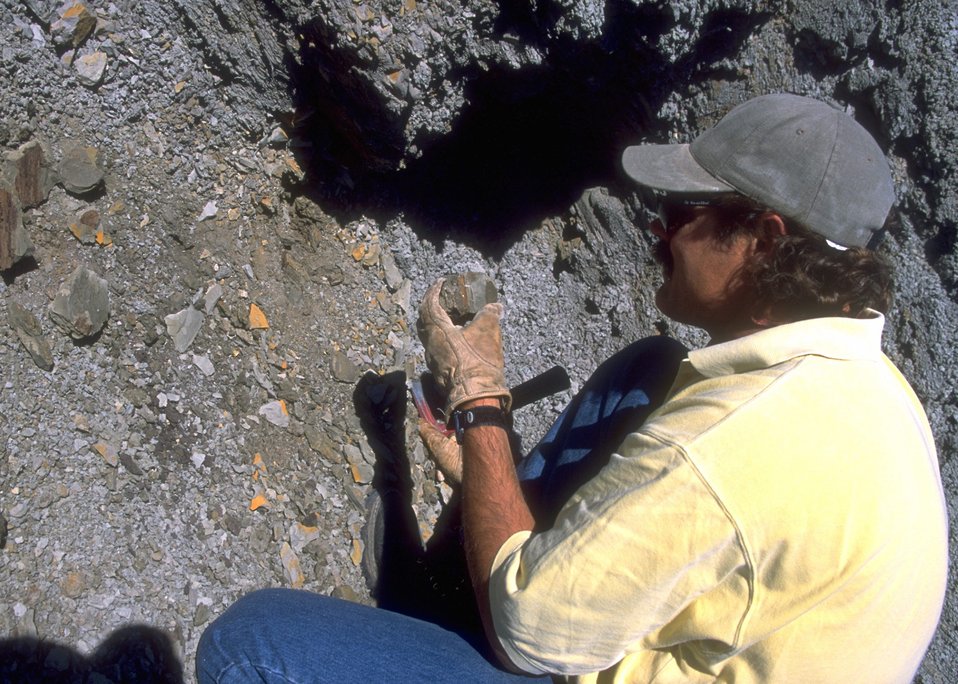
Dave Baker, WFO, examining fossils at the Cedar Ridge Paleo area, Lander Field Office.